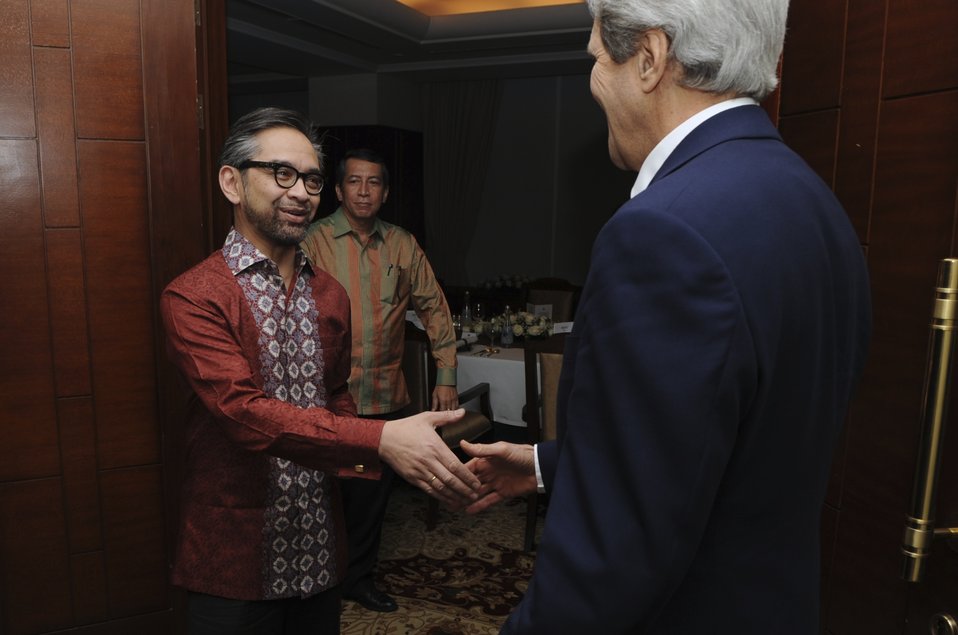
Indonesian Foreign Minister Natalegawa Greets Secretary Kerry in Jakarta

Indonesian Foreign Minister Marty Natalegawa greets U.S. Secretary of State John Kerry as he arrives for a dinner meeting in Jakarta, Indonesia, on February 16, 2014.